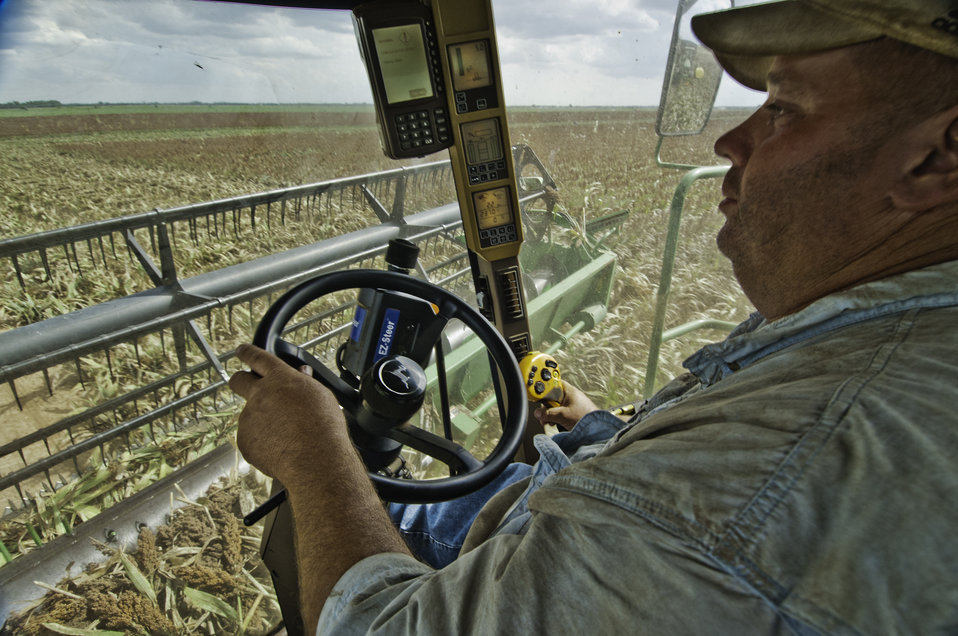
Mr. Wilder uses modern technology to harvest his grain sorghum on his farm in Navasota, TX on Aug. 23, 2013.